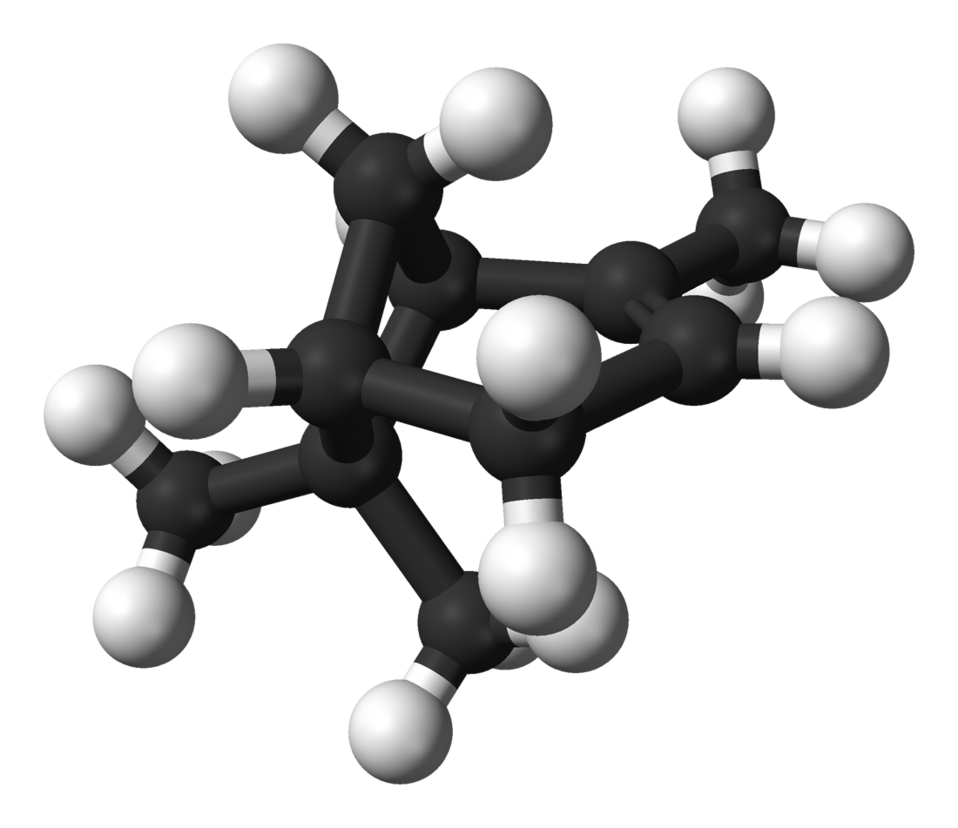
Ball-and-stick model of the ( )-α-pinene molecule